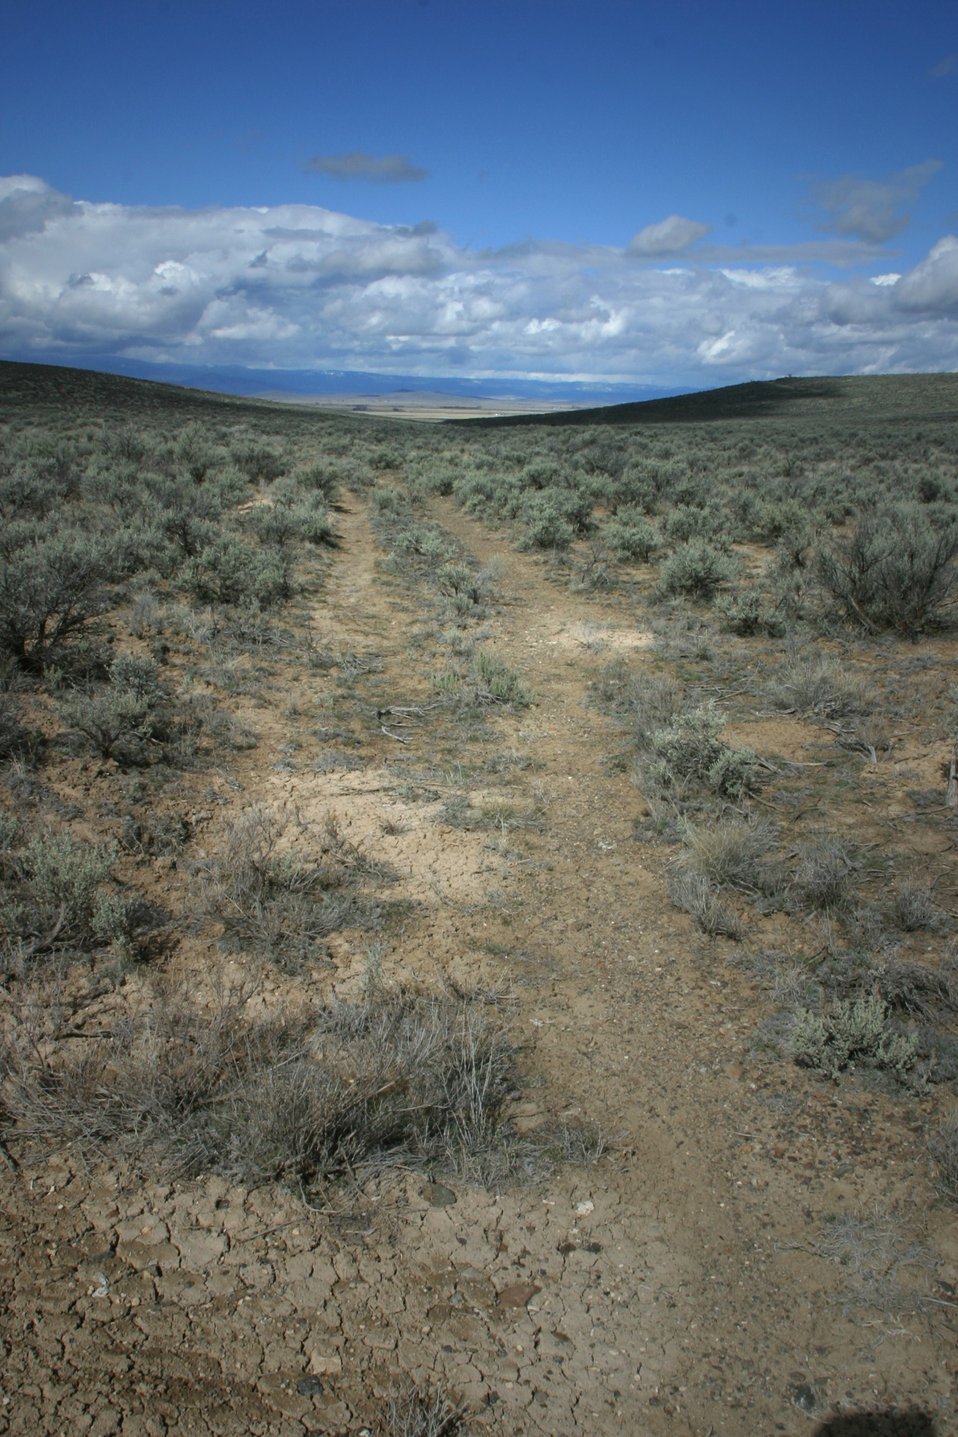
Oregon Trail ruts below the National Historic Oregon Trail Interpretive Center.